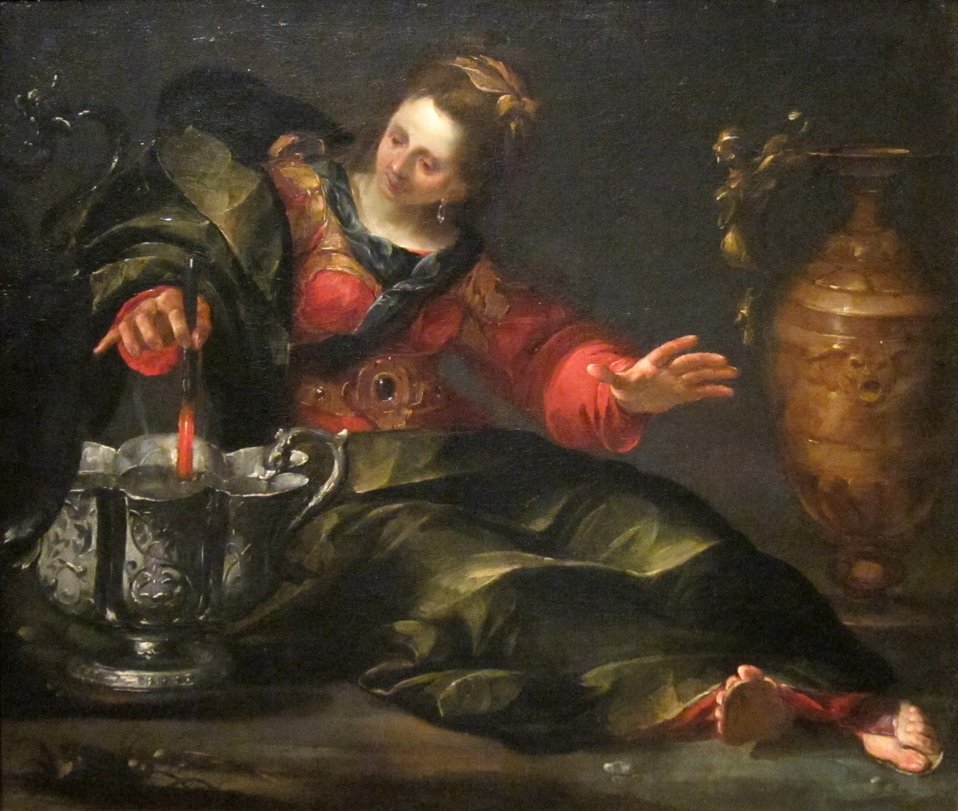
Circe Mulling Wine, oil on canvas painting by Gioacchino Assereto, c. 1630, Dayton Art Institute